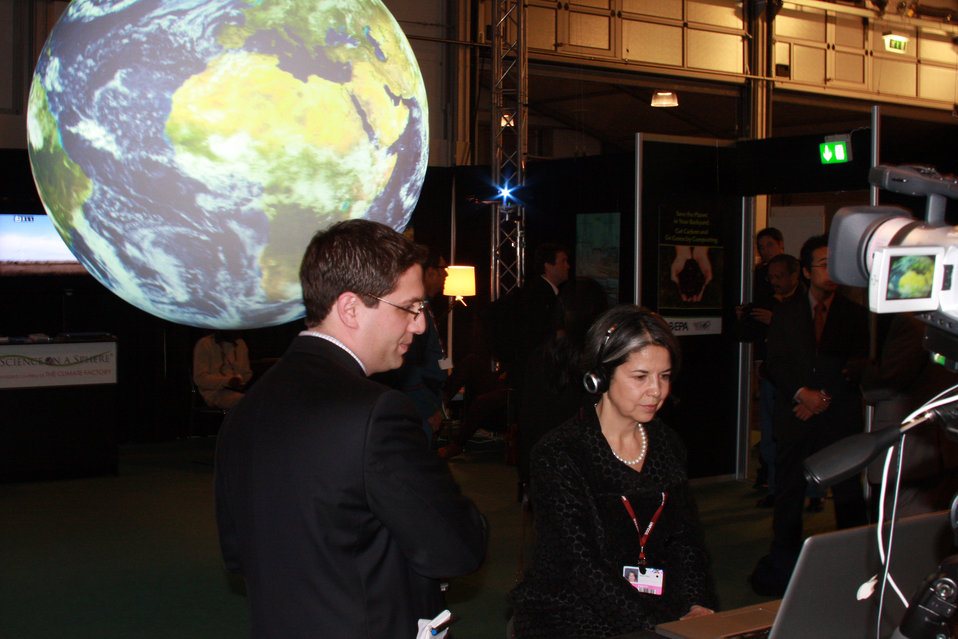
Web Chat With French Students

U.S. Undersecretary for Global Affairs Maria Otero with Bureau of European Affaris Public Affairs Specialist Shai Korman as she participates in a web chat with French student participants of the Burean of European Affairs Alumni Climate Challenge at COP15 (Conference of the Parties to the UN Framework Convention on Climate Change) in Copenhagen, Denmark December 10, 2009.